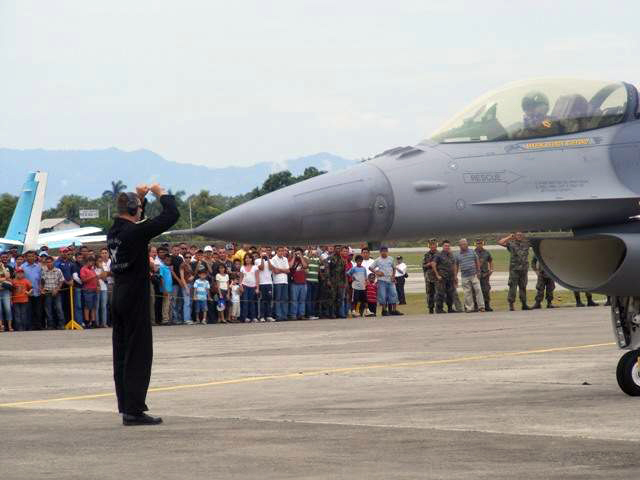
Honduras airshow aids local hospital

A crowd of airshow attendees cheer as a crew chief from the Viper East F-16 Demonstration Team marshals an F-16 Fighting Falcon after an aerial demonstration June 21 at San Pedro Sula, Honduras. More than 30 Airmen participated at the international airshow.